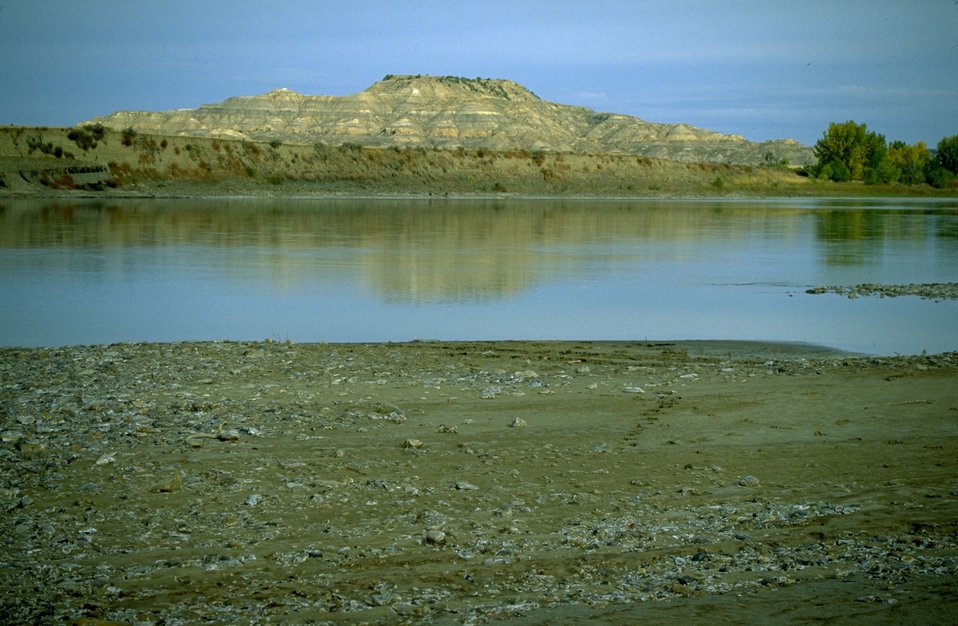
Reflection of Sheridan Butte in the Yellowstone River